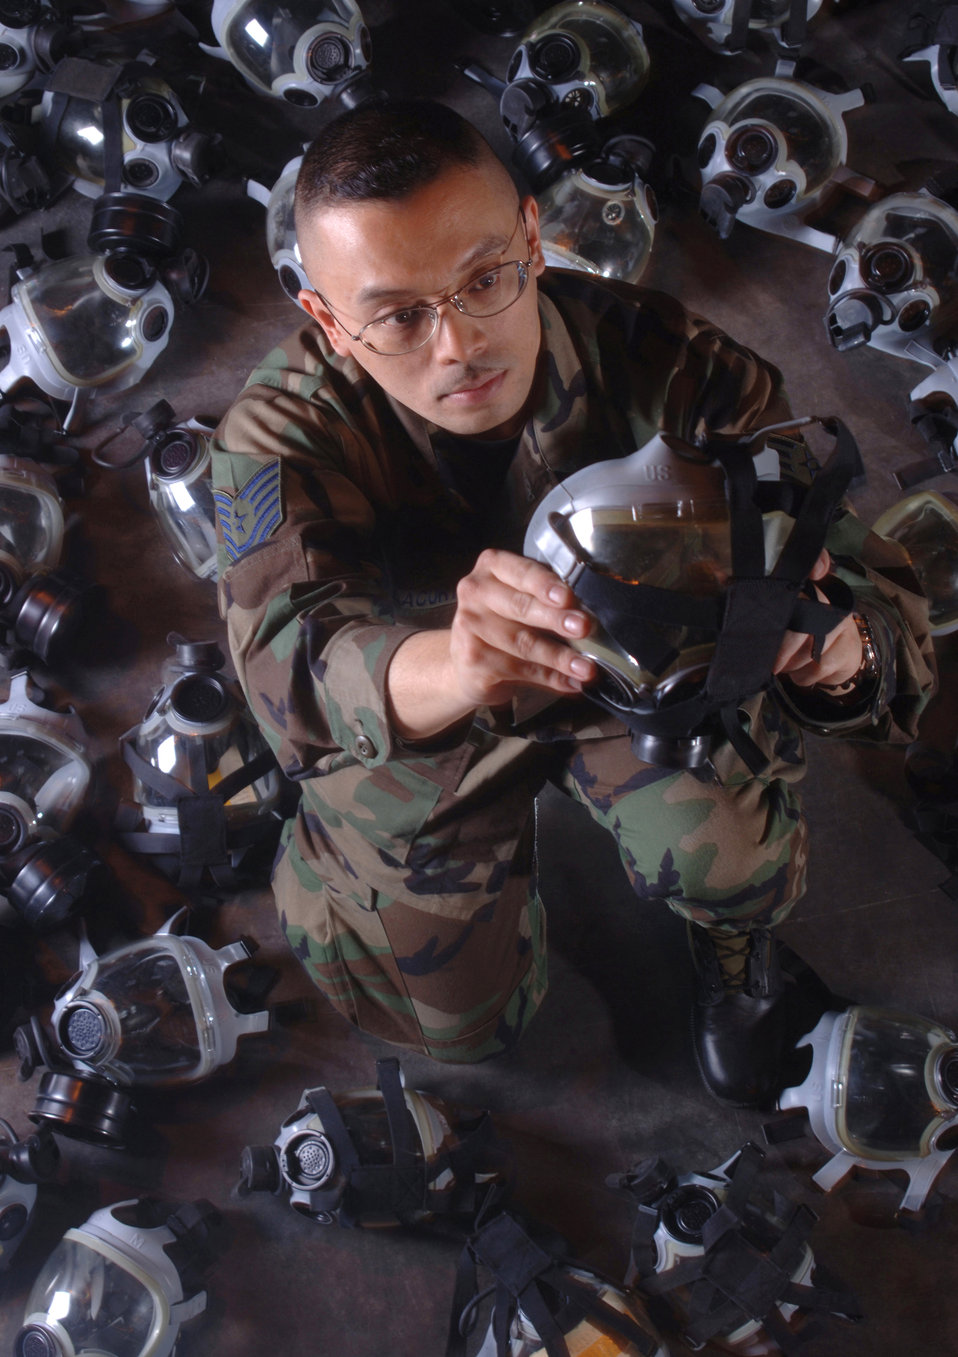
Readiness troops

YOKOTA AIR BASE, Japan (AFPN) -- Tech. Sgt. Max Villacorta inspects gas masks for serviceability during an inventory. Sergeant Villacorta is a war readiness technician with the 374th Logistics Readiness Squadron. The squadron manages 26,000 critical supplies and equipment.